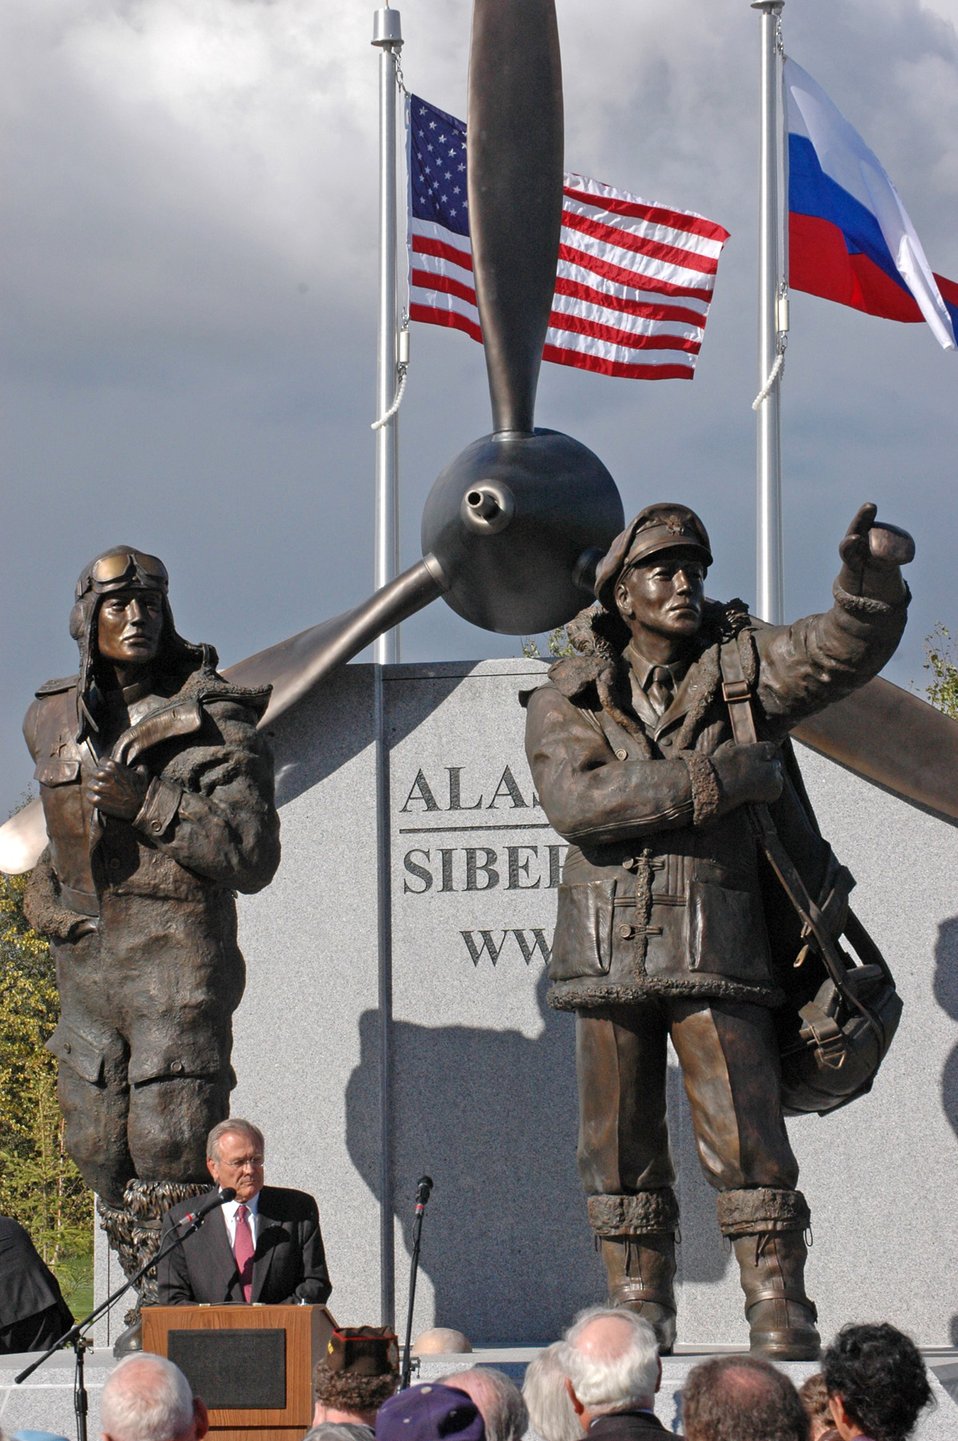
Memorial dedication honors American, Russian aviators

Defense Secretary Donald Rumsfeld speaks at the dedication of the Alaska-Siberia Lend-Lease Memorial in Fairbanks, Alaska, Aug. 27.